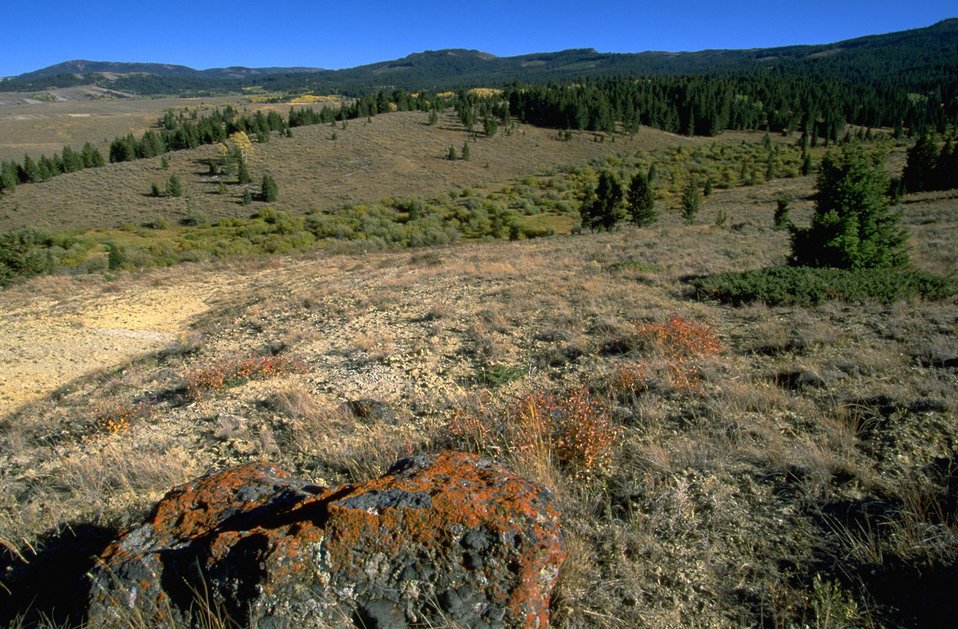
Sagebrush hills giving way to timbered slopes in background.